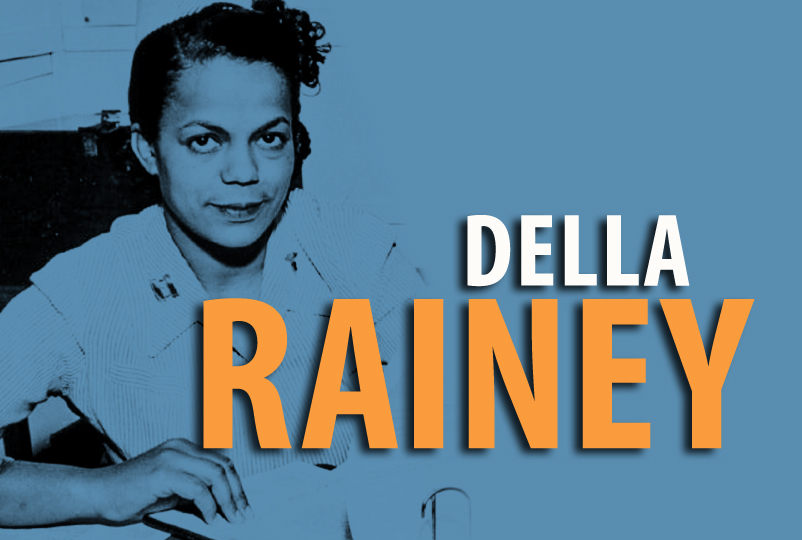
Della Rainey